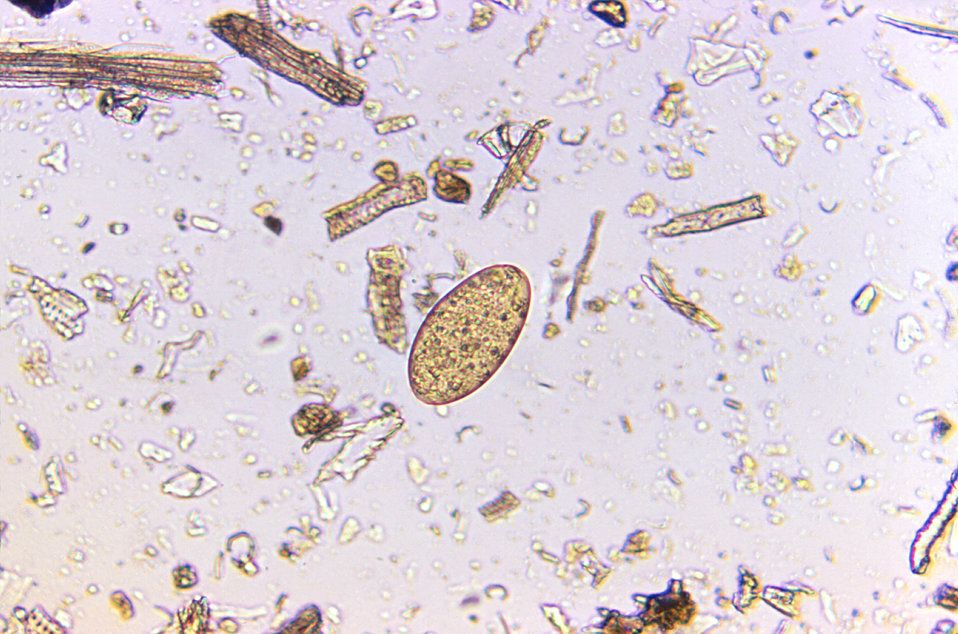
Magnified 125X, this photomicrograph revealed the presence of a Fasciolopsis buski trematode egg that was found in an unstained formalin-preserved stool sample. F. buski are the largest intestinal flukes found parasitizing human beings. These flukes inhabit Asia and the Indian subcontinent, especially in areas where humans raise pigs, and consume freshwater plants.Clinical Features: